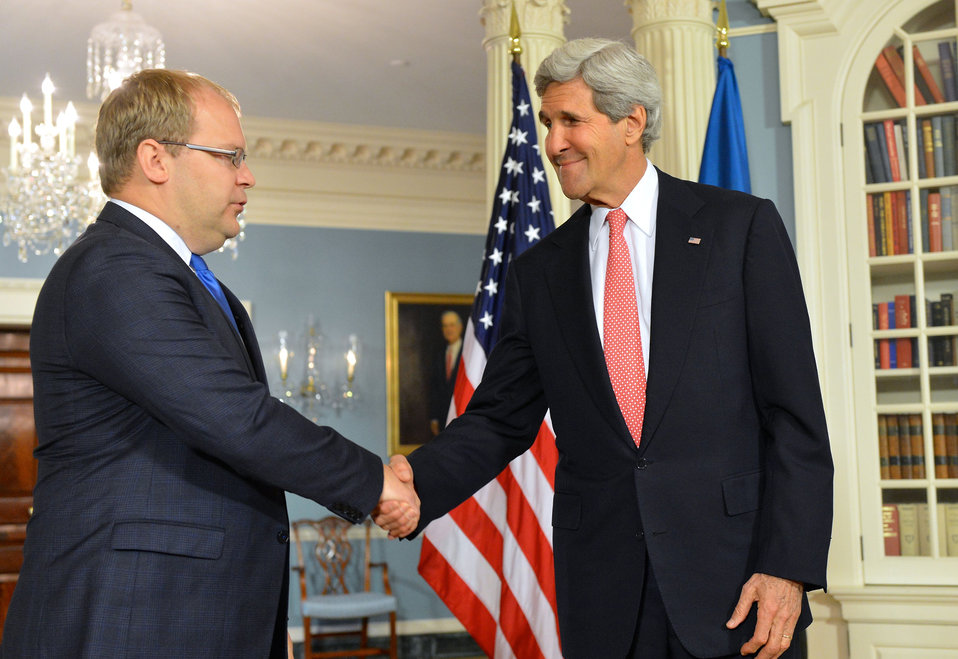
Secretary Kerry Shakes Hands With Estonian Foreign Minister Paet

U.S. Secretary of State John Kerry shakes hands with Estonian Foreign Minister Urmas Paet before their bilateral meeting at the U.S. Department of State in Washington, D.C., on May 29, 2014.